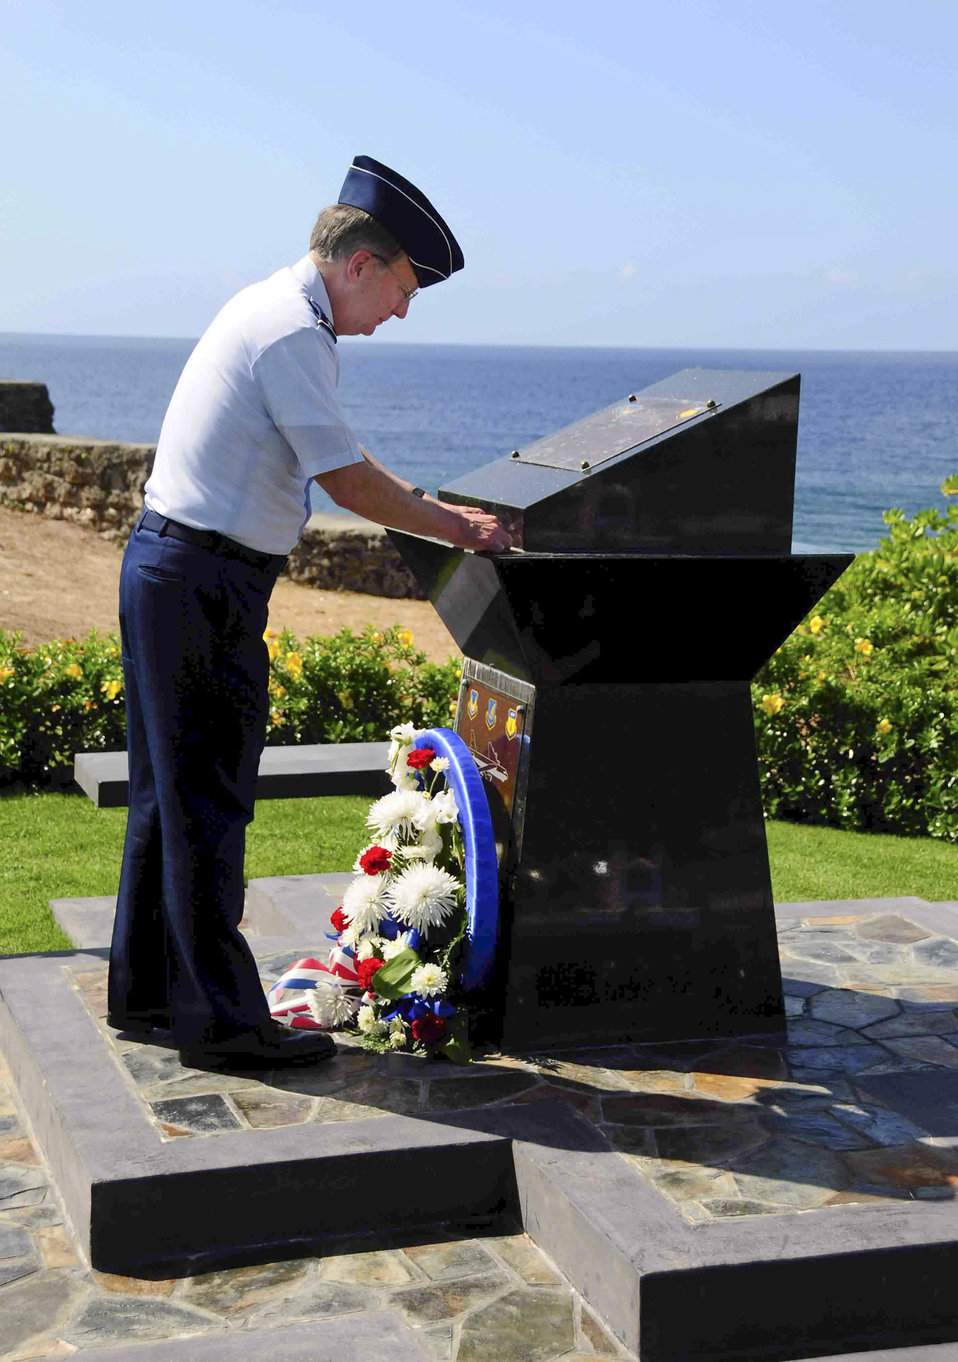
Gen. Klotz Andersen Visit

Lt. Gen. Frank G. Klotz places his